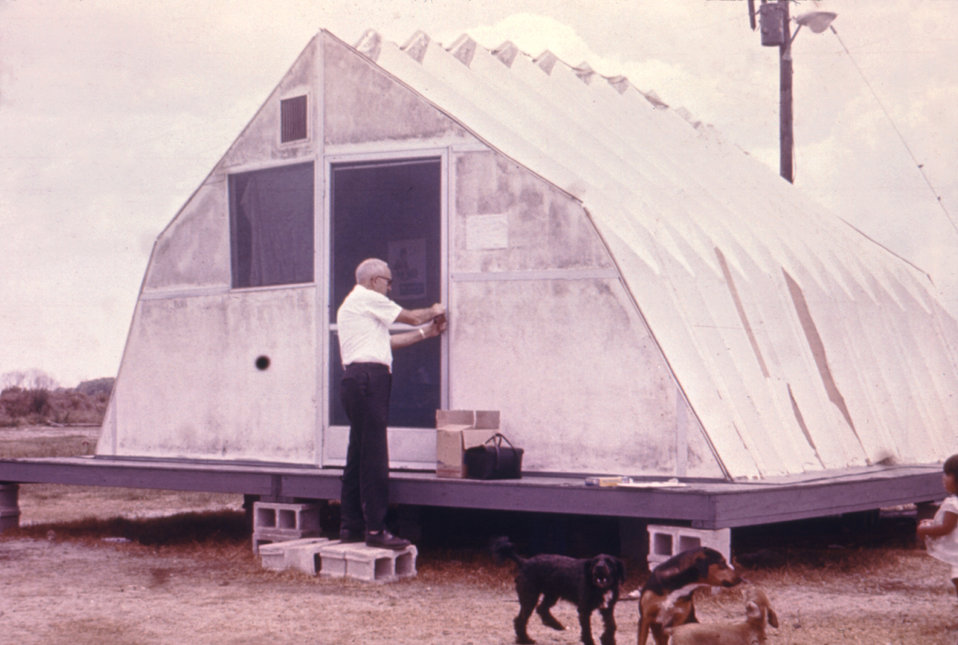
This was part of a series used to familiarize public health inspectors with sanitation conditions in migrant worker camps.